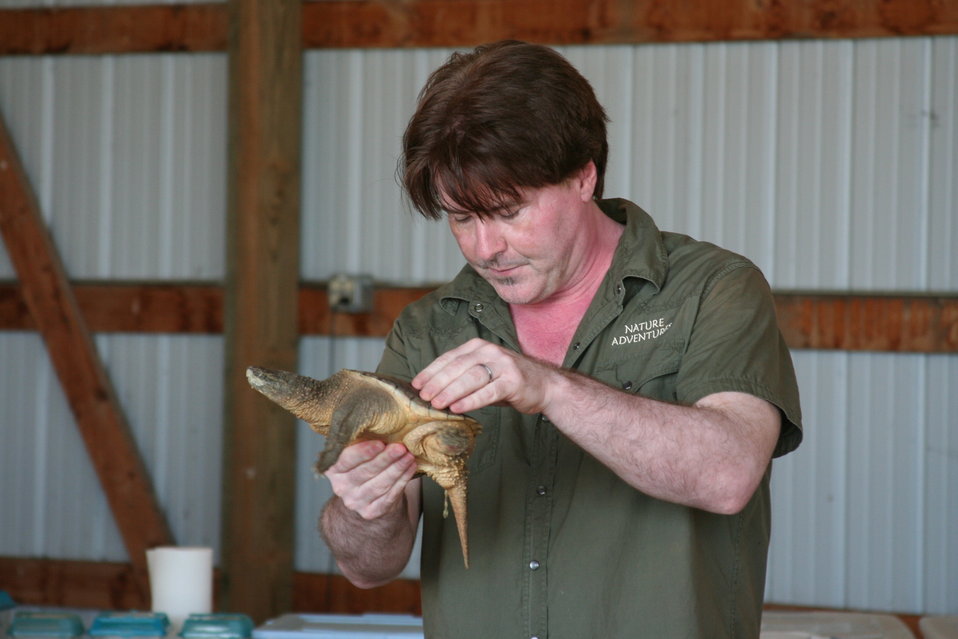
2011 Huron Prairie Fest